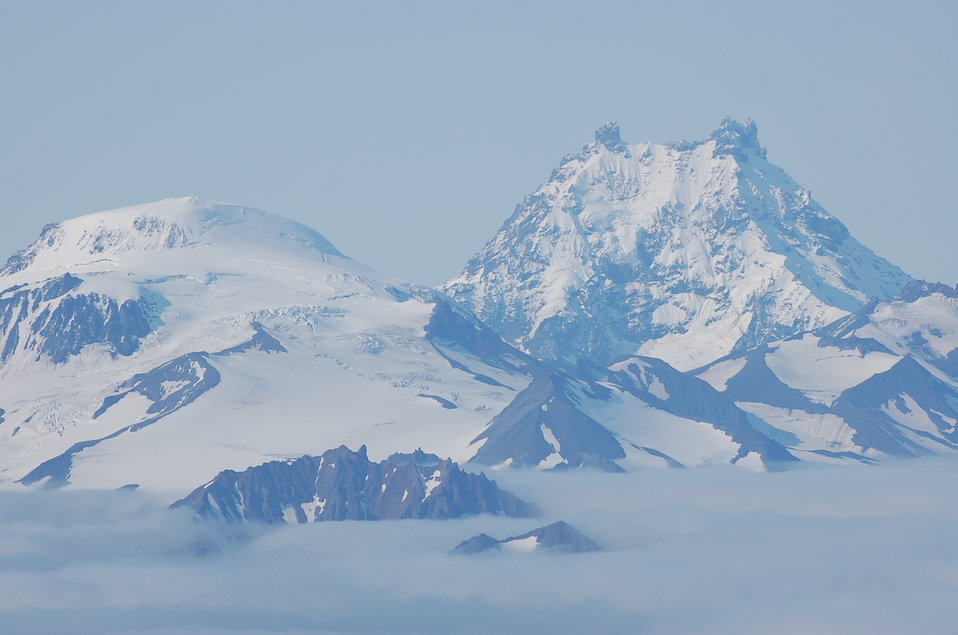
Roundtop and Isanotski Volcanoes

Unimak Island, Alaska Maritime National Wildlife Refuge